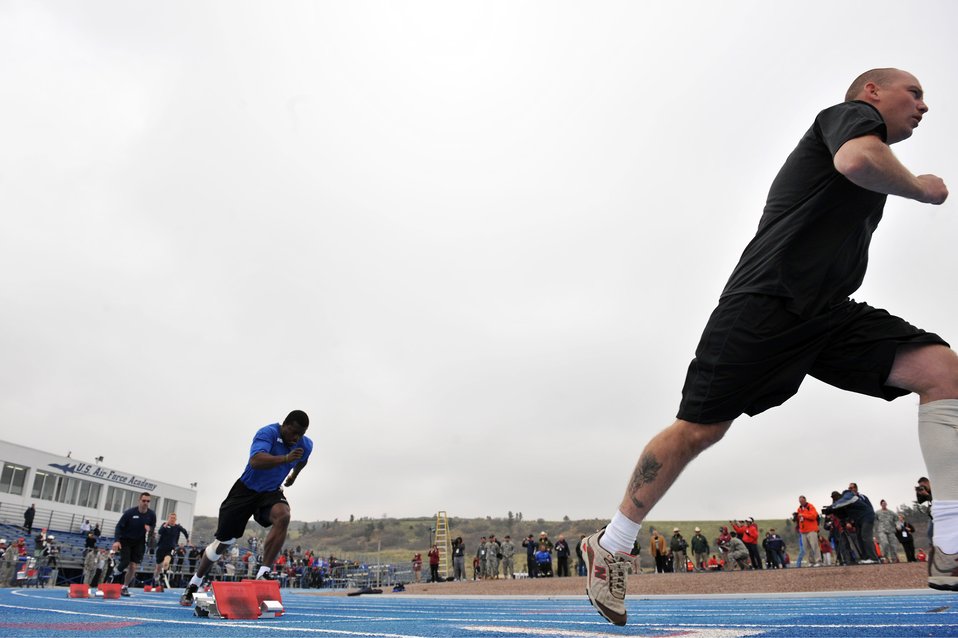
Warrior Games AF track and field

Athletes compete in the track and field events during the Warrior Games at the Air Force Academy track in Colorado Springs, Colo., May 14, 2010.